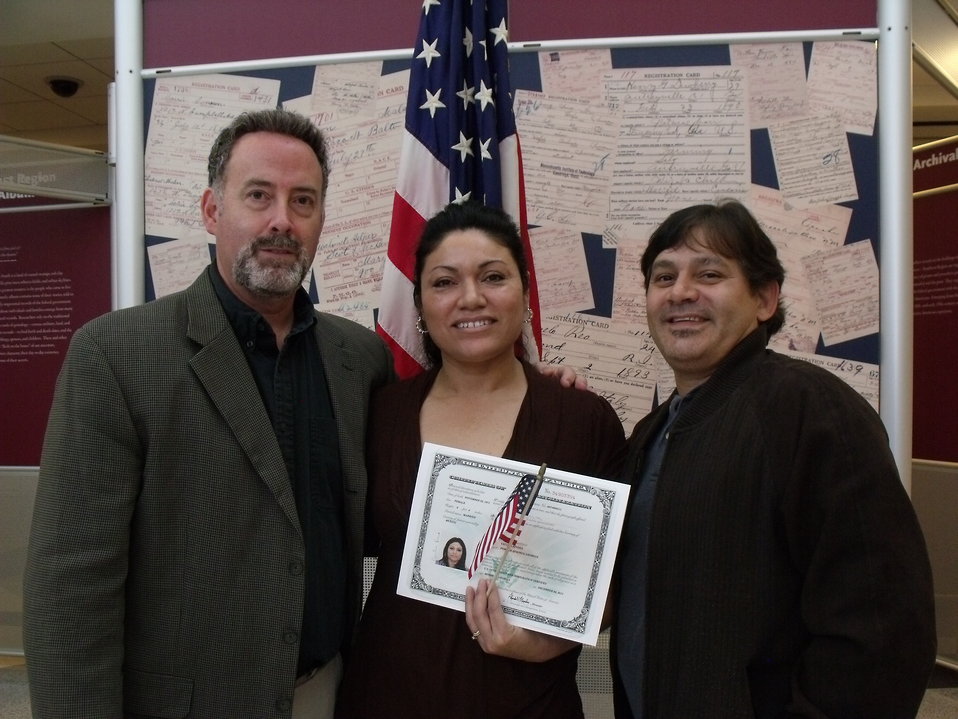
New Citizens